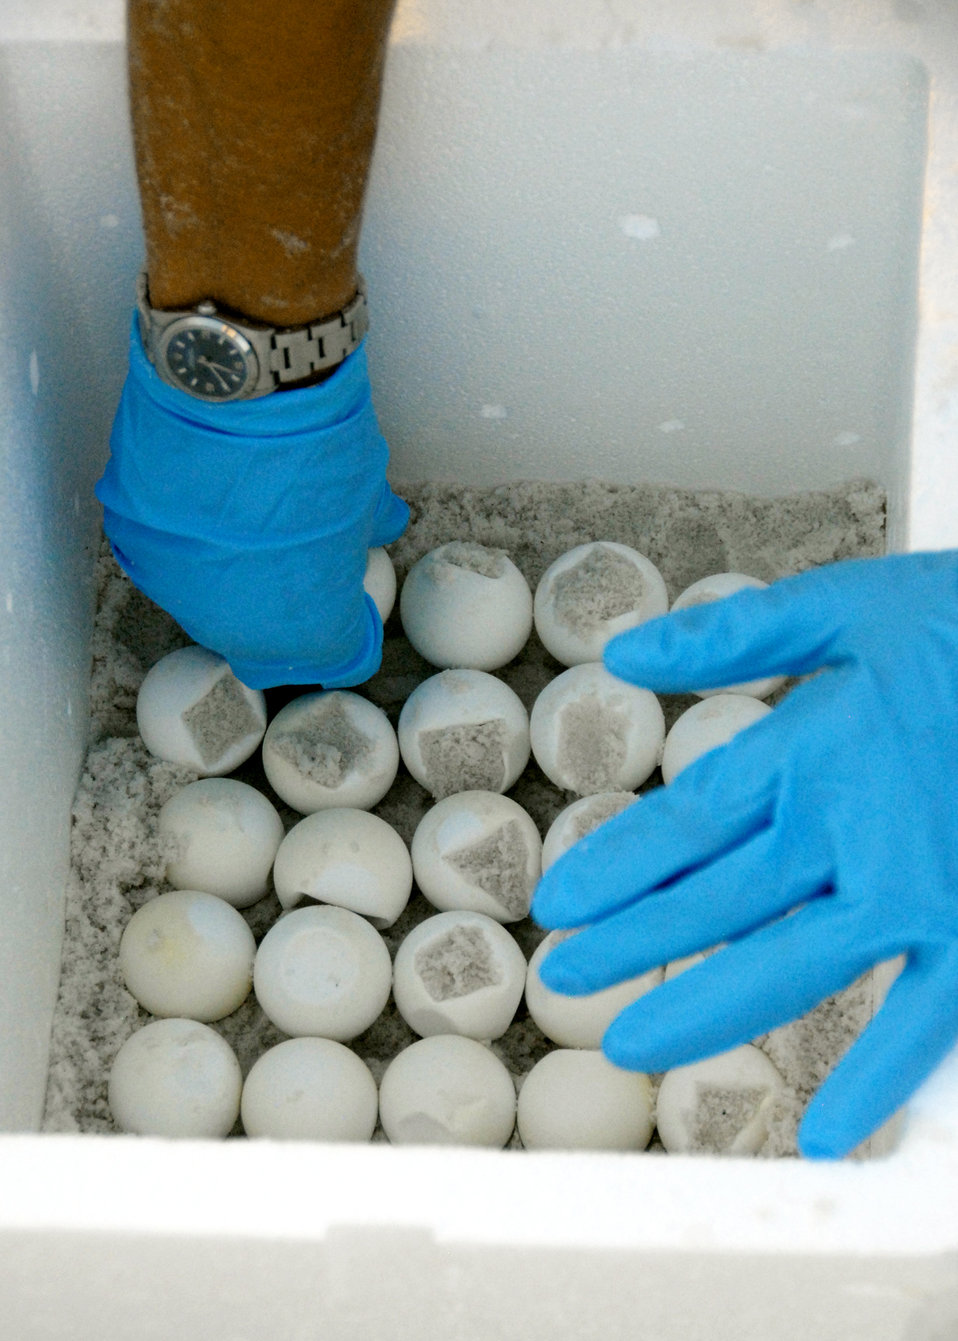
Sea turtles

A 96th Civil Engineer Squadron biologist places another sea turtle egg in a cooler Aug. 2, 2010, on a beach at Eglin Air Force Base, Fla. The eggs will be transported to the east coast so the turtles can be released without the threat of encountering oil from the spill in the Gulf of Mexico.